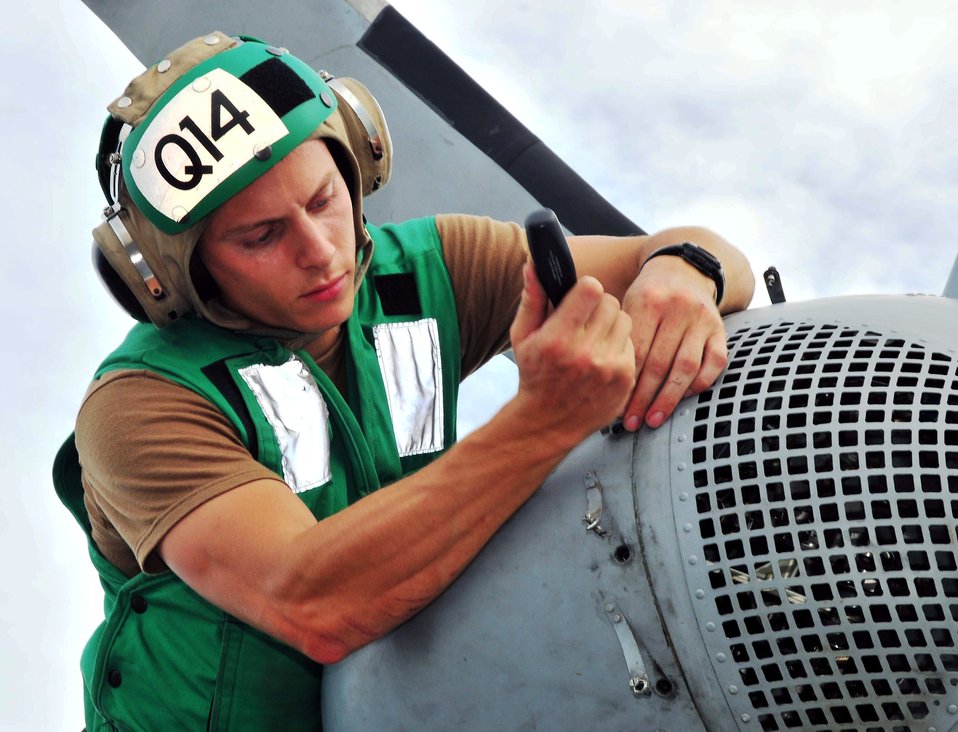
Aviation Electronics Technician 3rd Class Evan Dunham, with Helicopter Combat Squadron 23 “Wildcards,” Inspects an MH-60S Knighthawk

Aviation Electronics Technician 3rd Class Evan Dunham, with Helicopter Combat Squadron 23 “Wildcards,” inspects one of the MH-60S Knighthawks on the flight deck of the Military Sealift Command hospital ship USNS Mercy (T-AH 19) on June 26, 2010, in Sihanoukville, Cambodia. Mercy is in Cambodia conducting Pacific Partnership 2010, the fifth in a series of annual U.S. Pacific Fleet humanitarian and civic assistance endeavors designed to strengthen regional partnerships.